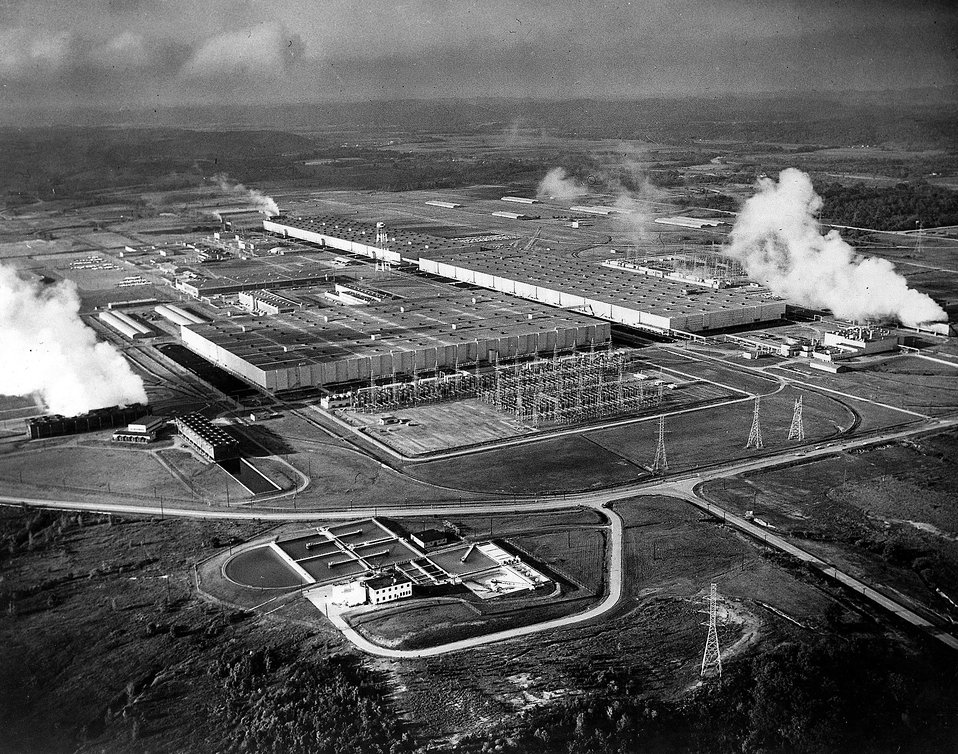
Portsmouth Gaseous Diffusion Plant, located on a 4,000-acre tract of land. Its three process buildings cover approximately 220 acres, or 9,650,000 square feet of floor space. Circa 1969.